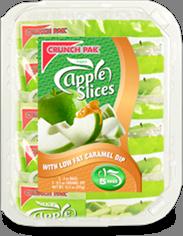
RECALLED – Apple slices

November 14, 2013 – Product Recall – Crunch Pak Issues Voluntary Recall of Limited Quantities of Crunch Pak Brand Apple Slices Because of Possible Health Risk.